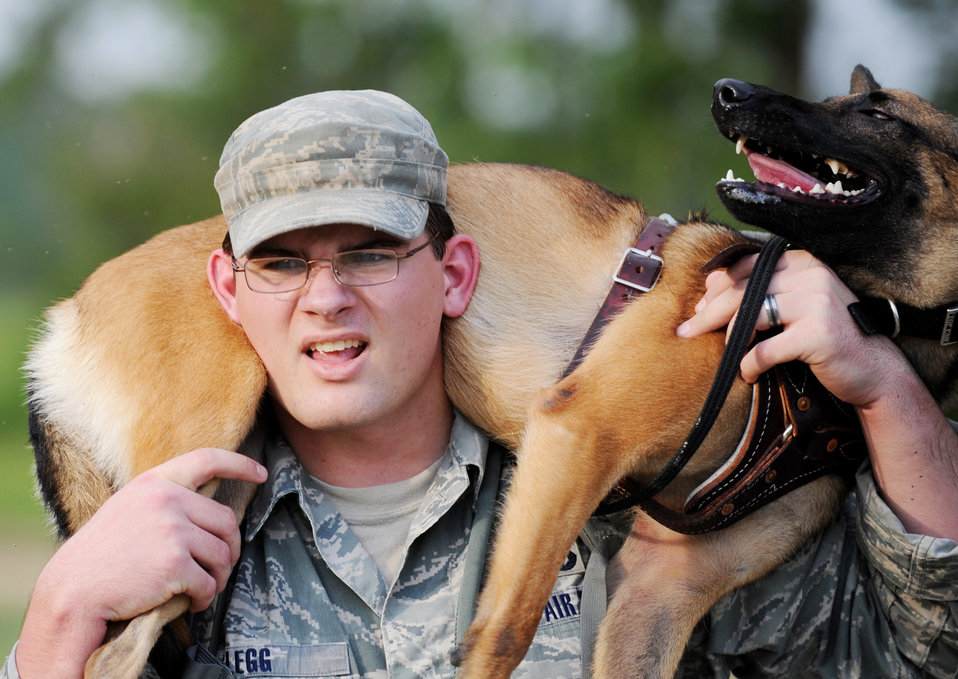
New dog and handler develop bond

Rreyana enjoys the ride as Senior Airman Beaun Clegg carries her during a training exercise July 9 at Moody Air Force Base, Ga. Airman Clegg is is a military working dog handler with the 822nd Security Forces Squadron, and is Rreyana's first dog handler here at Moody.